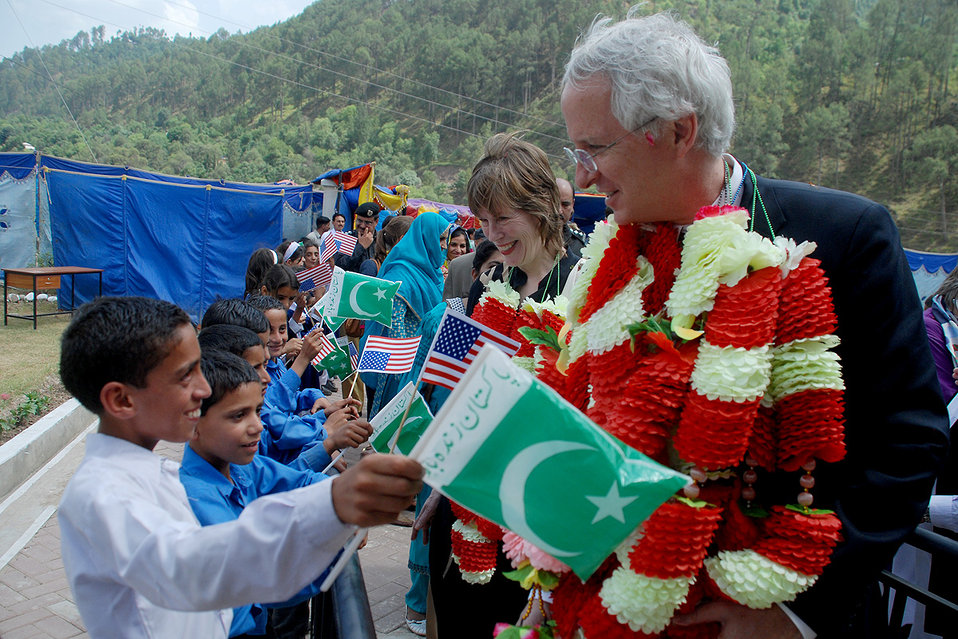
Envoy Highlights U.S. Development

The two schools together have 958 students and serve arja as well as 10,000 catchment populations in 16 surrounding hamlets and villages.